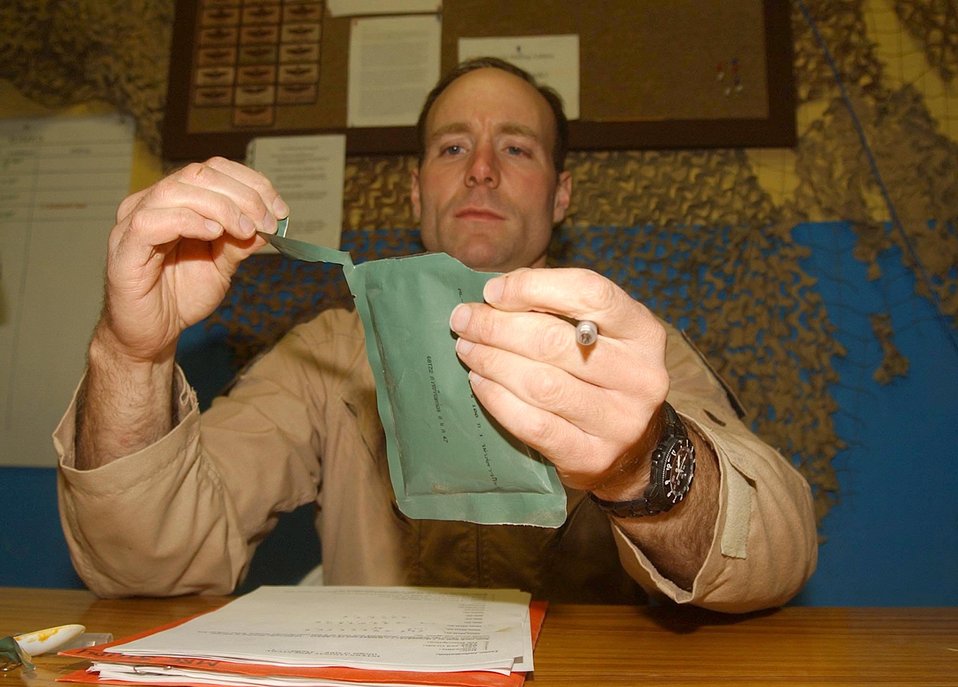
Taste test

BAGRAM AIR BASE, Afghanistan -- Maj. (Dr.) Michael Paston opens a Thai ration that will be tested among more than 25 airmen. Paston is assigned to the 455th Expeditionary Operations Group here.